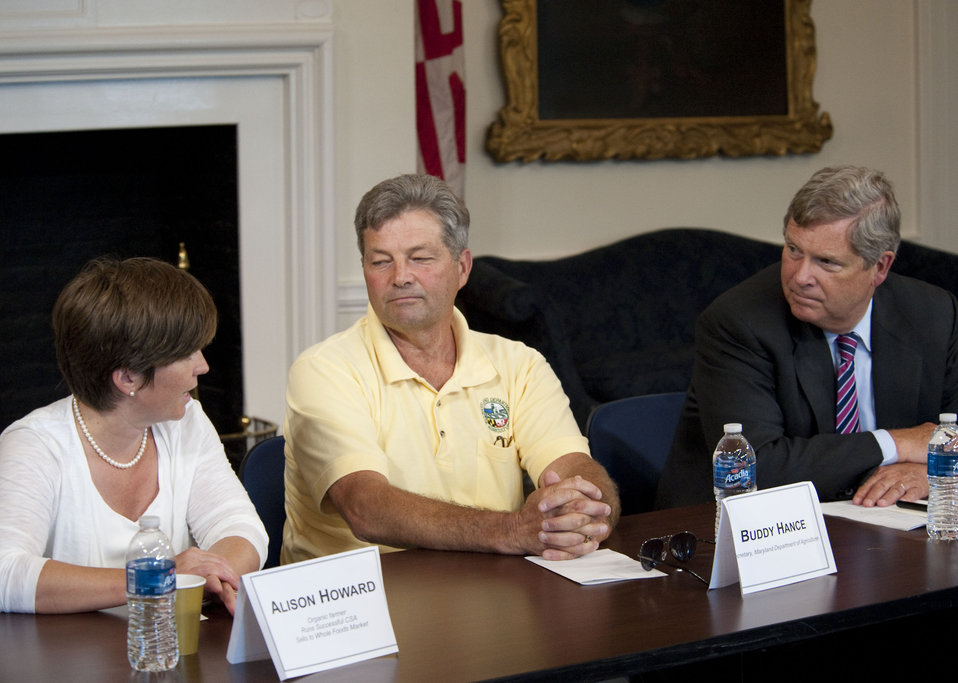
Agriculture Secretary Tom Vilsack meeting with Maryland Agricultural Leaders for a round table discussion in Annapolis, MD, on Thursday, July 21, 2011.